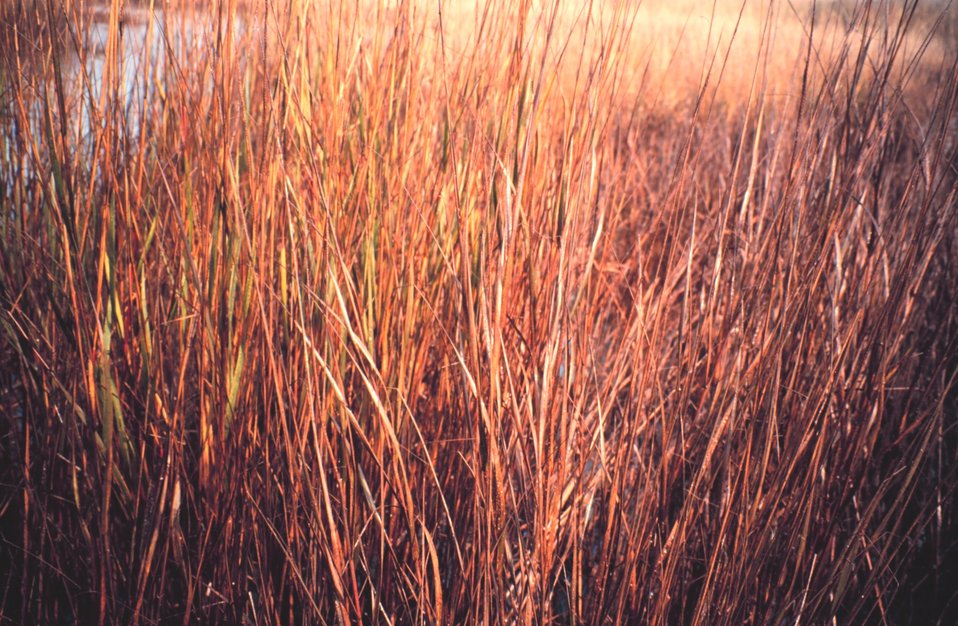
Close-up of oiled Spartina - a cordgrass common in coastal marshes